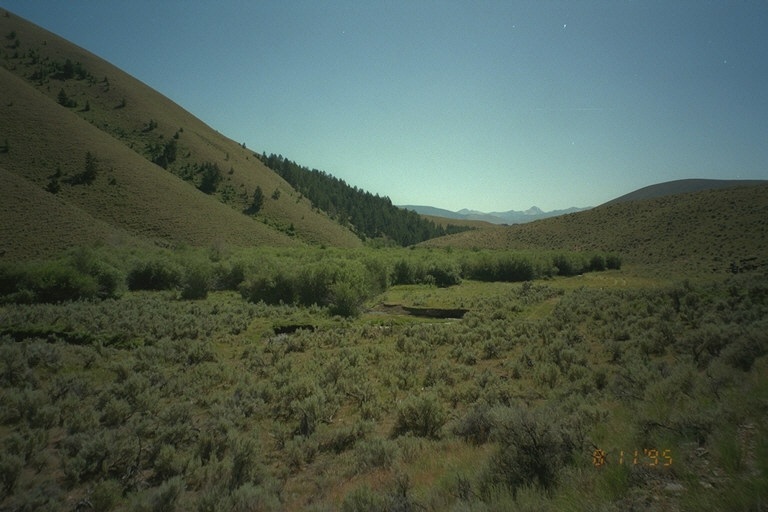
Riparian area Public Lands Salmon Field Office UCSC Upper Columbia Salmon Clearwater District